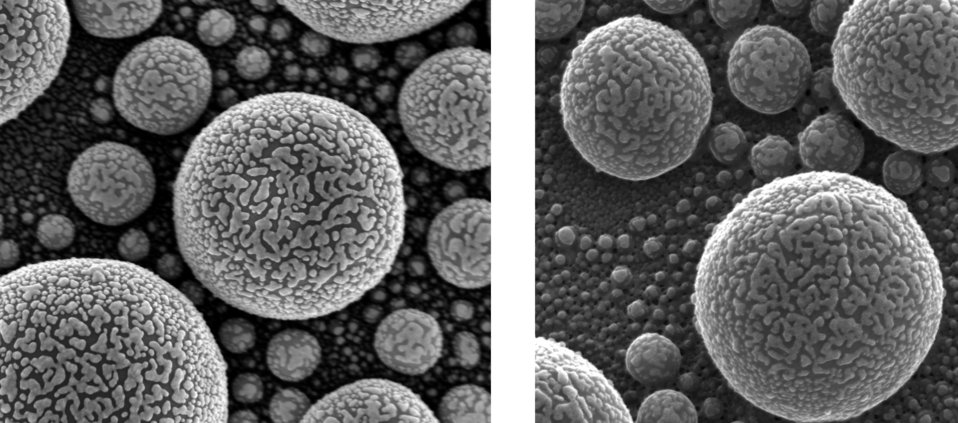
Helium Ion Microscope

In-depth look: An image of gold atoms on tin from a state-of-the-art scanning electron microscope (left) has relatively poor depth of field - only parts of the image are in sharp focus. By contrast, the entire image from a helium ion microscope image (right) is sharp and clear. NIST researchers are studying helium ion microscopes to improve measurements at the nanoscale that are important to the semiconductor and nanomanufacturing industries.